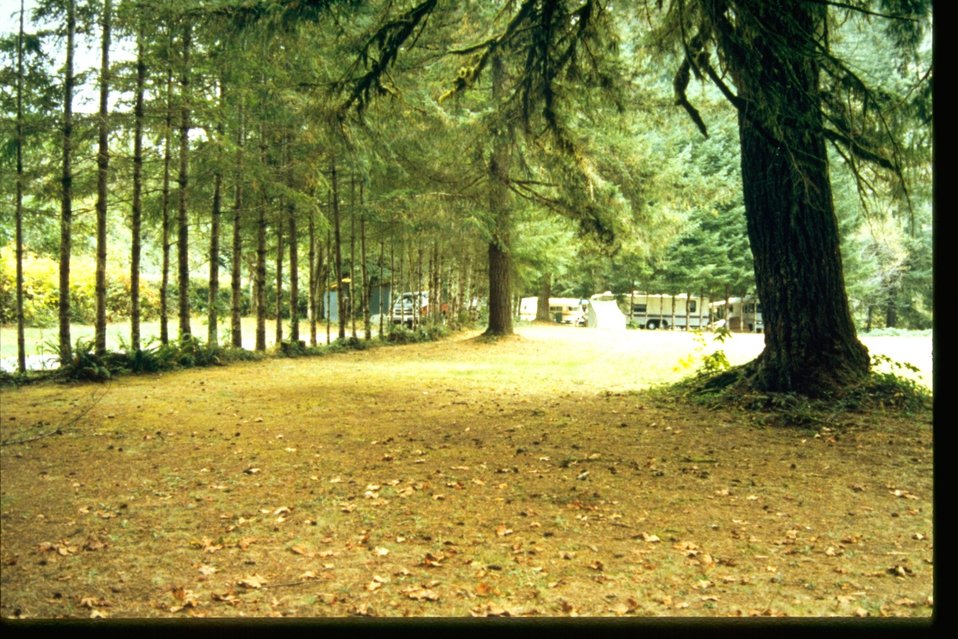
Vincent Creek Recreation Site. (Department of Forestry)